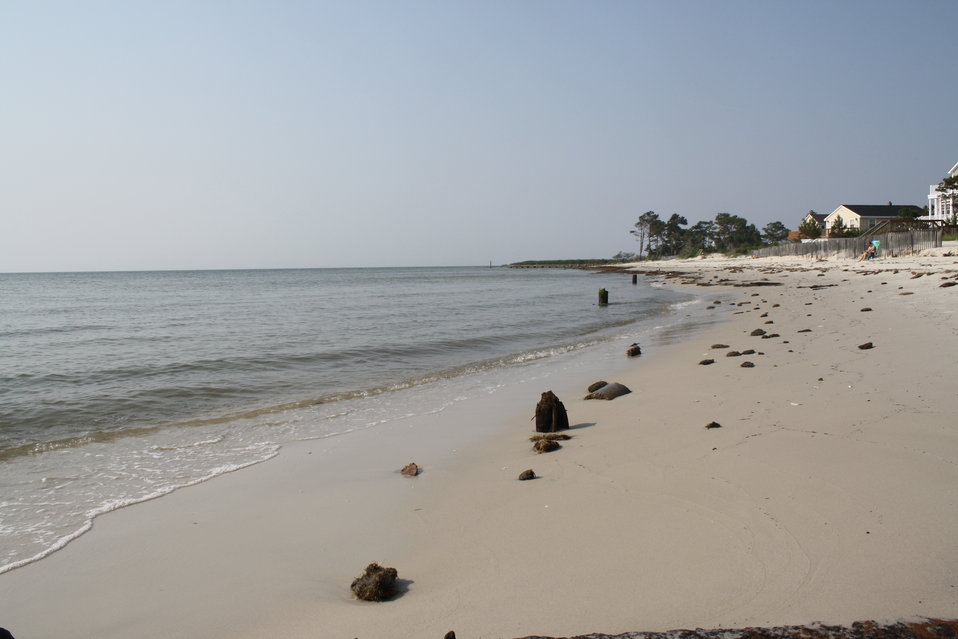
Bavon Beach project

But those aren’t the only homes at stake. Nearly all 1,023 meters of Bavon Beach shoreline support the federally threatened northeastern beach tiger beetle and other wildlife.